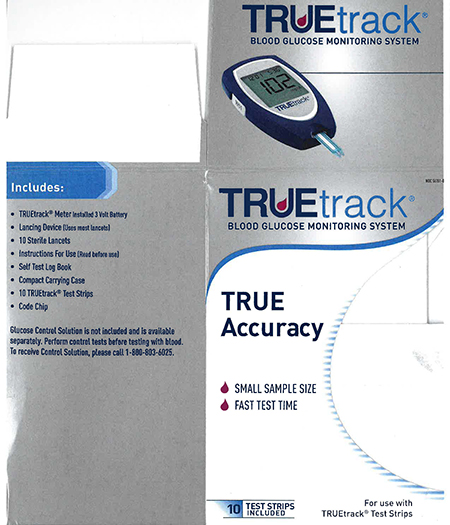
RECALLED – Blood Glucose Meters

January 2, 2014 – Product Recall – Nipro Diagnostics, Inc. Initiates Voluntary Recall of Certain TRUEbalance and TRUEtrack Blood Glucose Meters.